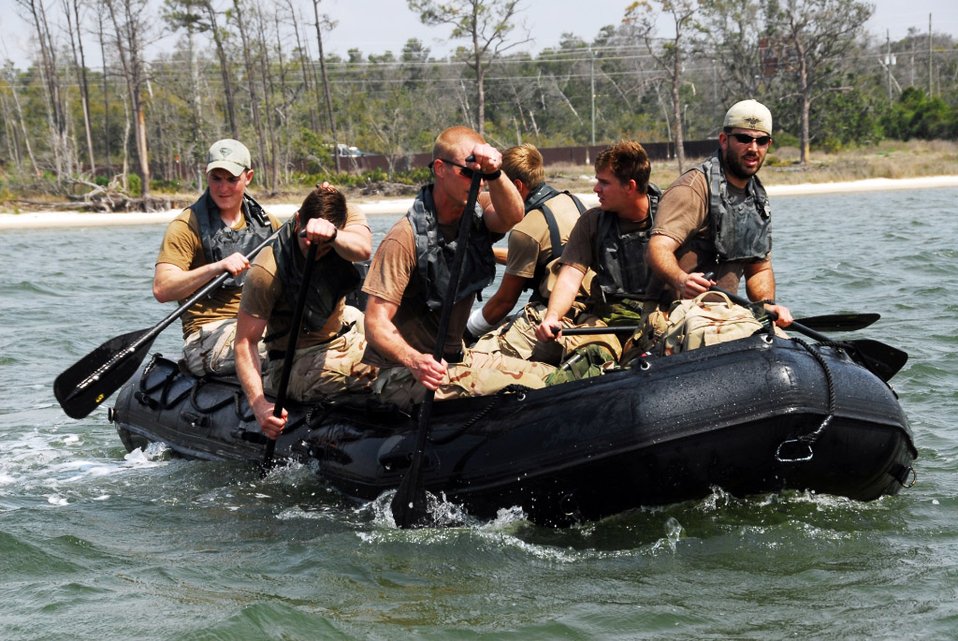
Special Operations Command Airman dies in Afghanistan

Staff Sgt. Timothy P. Davis (back left of boat) participated in amphibious training with his team. Sergeant Davis died of wounds suffered when his vehicle encountered an improvised explosive device Feb. 20 in Afghanistan. He was assigned to the 23rd Special Tactics Squadron at Hurlburt Field, Fla.